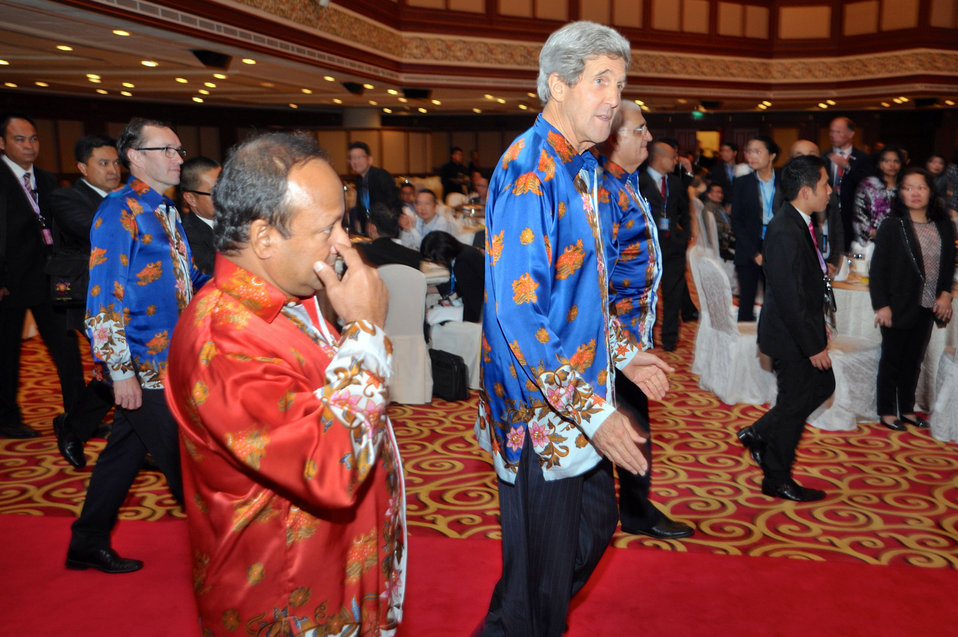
Secretary Kerry Enters the ASEAN Ministerial Dinner

U.S. Secretary of State John Kerry and fellow foreign ministers, all clad in batik shirts favored in Brunei, enter a gala dinner at the ASEAN ministerial meeting in Bandar Seri Begawan on July 1, 2013.